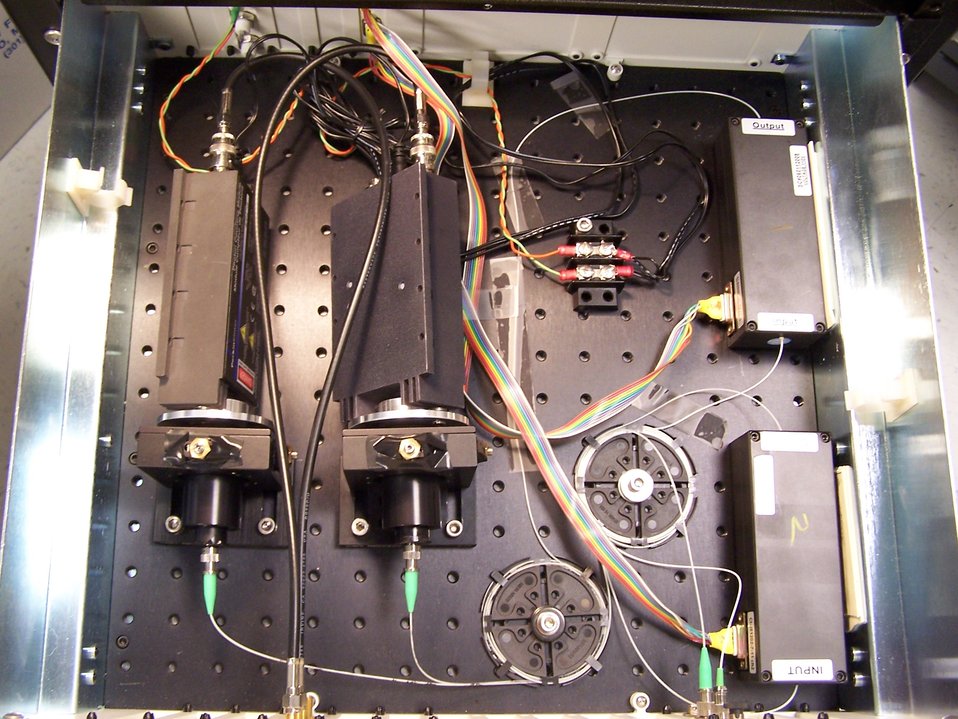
New Quantum Key System Combines Speed, Distance

Detection stage of the NIST prototype quantum key distribution (QKD) system: Incoming photons already have been sorted into one of two quantum states. Photons are 'up-converted' from 1310 to 710
nm by one of the two NIST-designed converters at right, then sent to one of two commercial silicon avalanche photo diode units to the left.